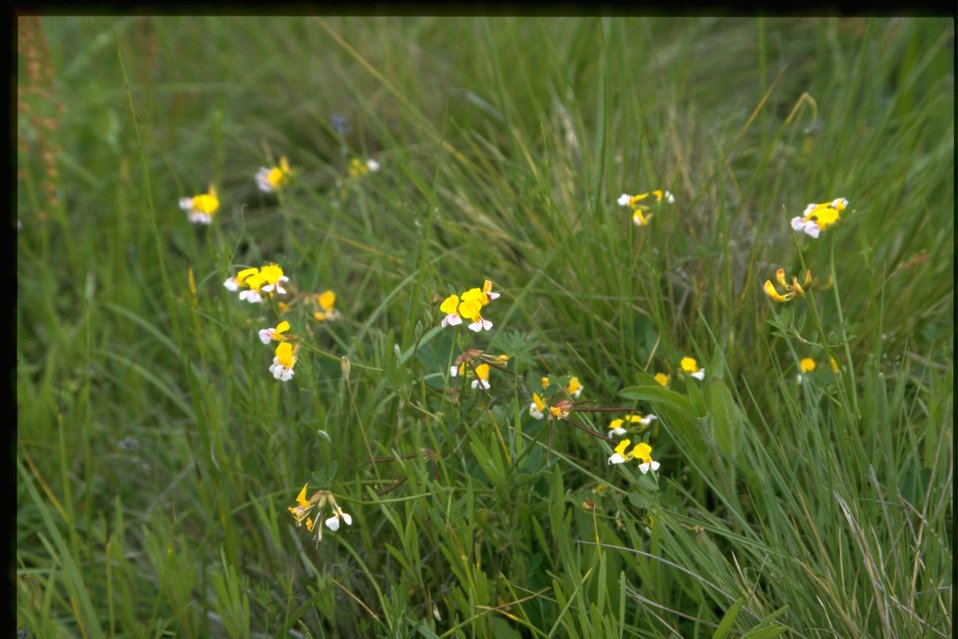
Farshot of Lotus pinnatus.